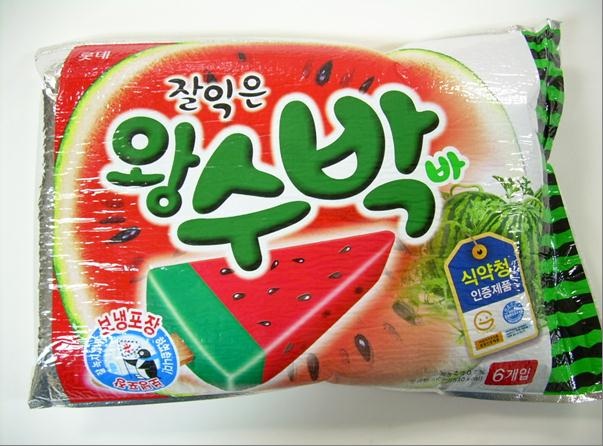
RECALLED – Frozen fruit bar (watermelon flavor)

February 28, 2014 – Product Recall – Jinsunmi International Inc. Issues A Voluntary Recall Of Its 17.98 oz Lotte Brand Frozen Fruit Bar (watermelon flavor) Due To Undeclared Peanuts.